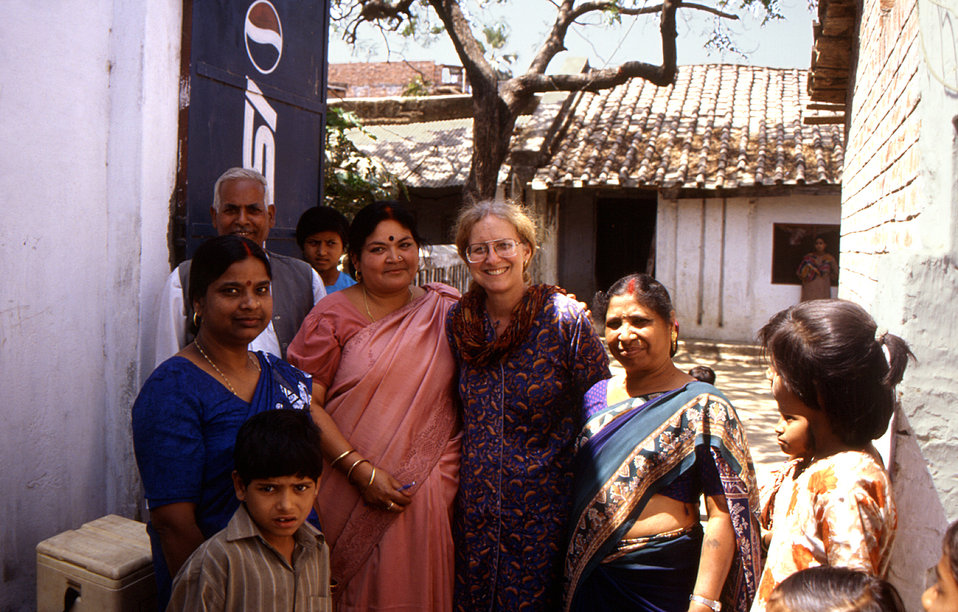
This 2000 image depicted Christine Zahniser, B.S.N., R.N., M.P.H., a STOP Transmission of Polio (STOP) immunization initiative team member and photographer standing with a group of Indian healthcare workers, including a local physician. The image was provided by Christine, who was at the time assigned to the state of Uttar Pradesh in northern India, and spent three months working in the Districts of Gorakhpur and Deoria.